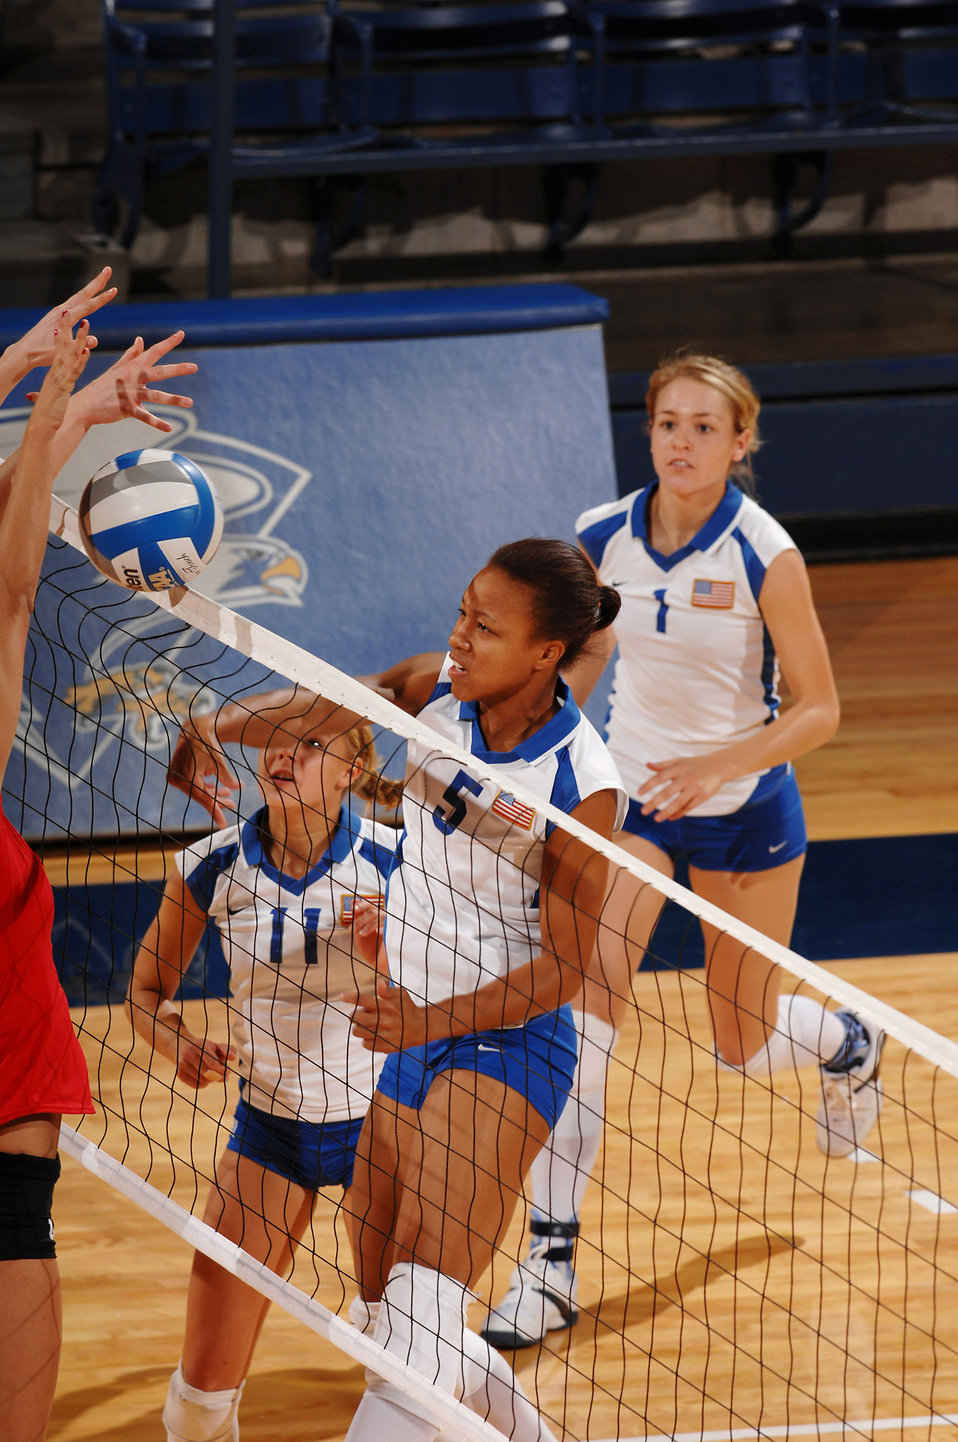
This shot won't go

Air Force Academy sophomore Jocelyn Booker's spike gets blocked by two University of Utah players in volleyball action Sept 28th as the Falcons were swept in 3 sets at the Academy's Clune Arena.